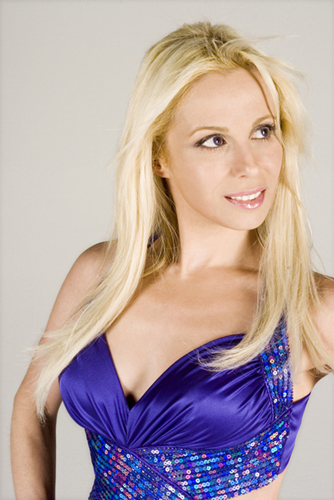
Sabrina A. Parisi